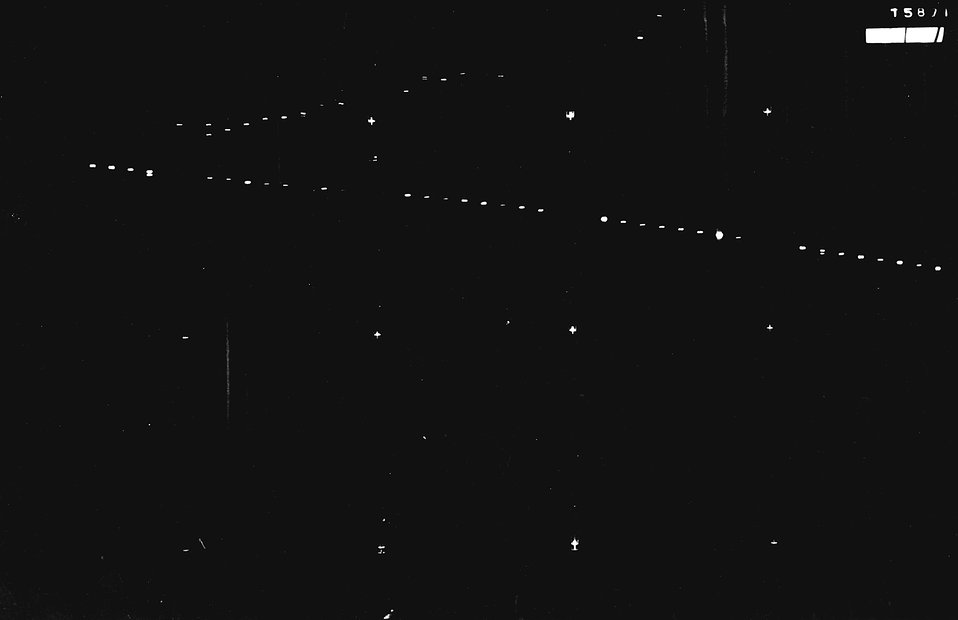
Photograph of a neutrino collision in the Columbia University 10-ton aluminum spark chamber
installed at the 33-billion-electron-volt Alternating Gradient Synchrotron at Brookhaven
National Laboratory. The long straight spark track is that of a mu-meson created by an
incident neutrino.